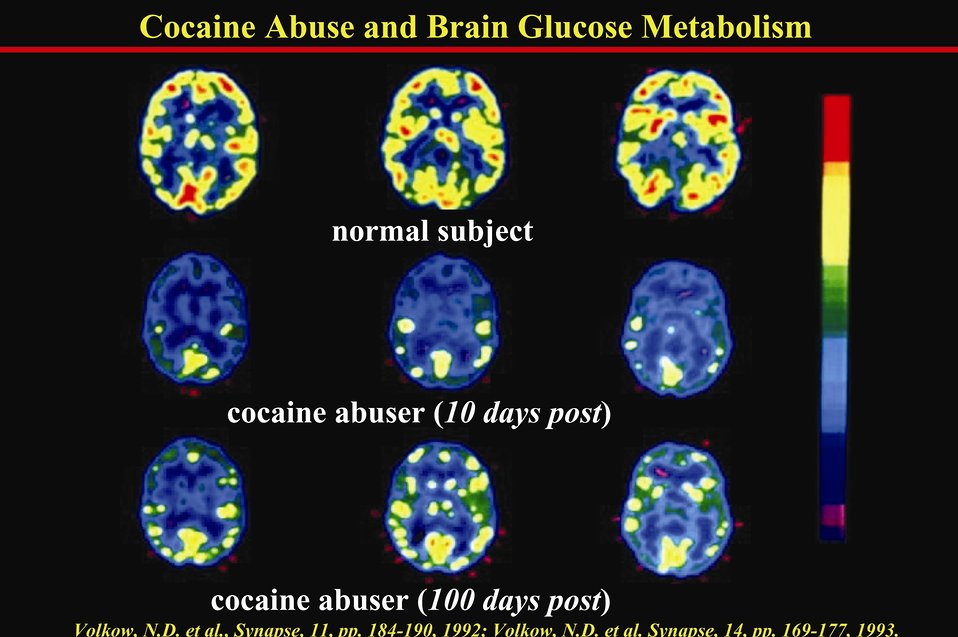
Cocaine Abuse and Brain Glucose Metabolism